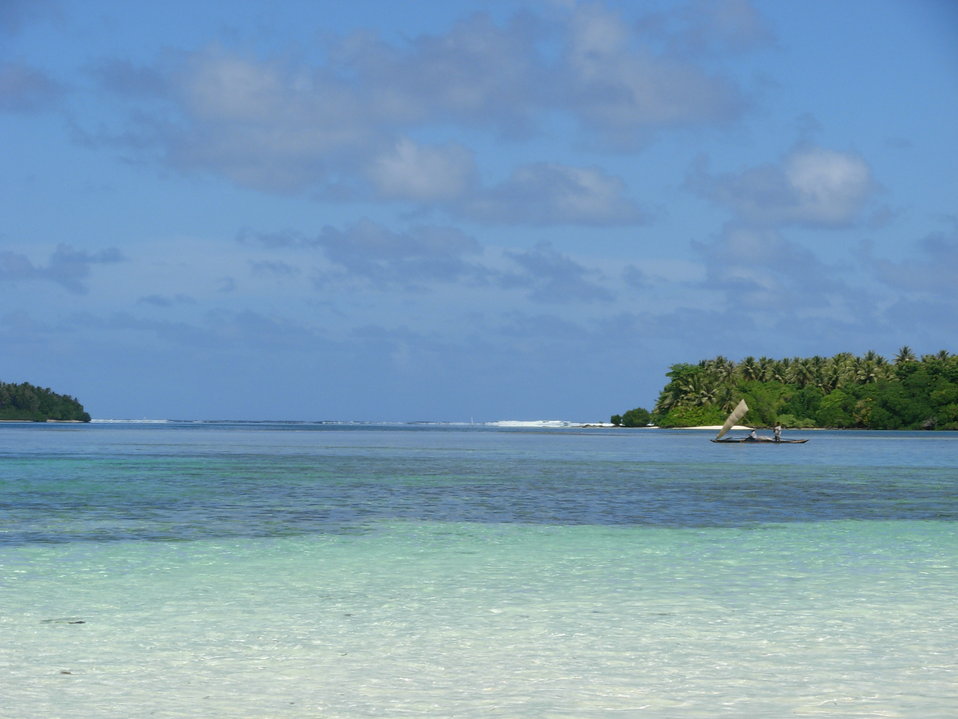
A native sailing canoe seen from the beach